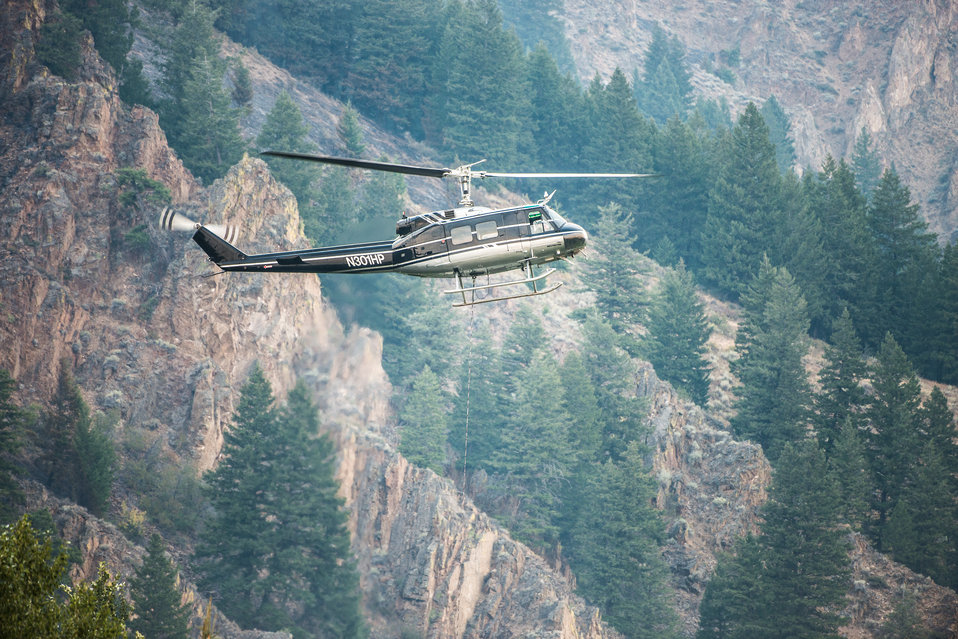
A Bell UH-1H helicopter performs water drops on fires, on the Carbonate Ridge, rising behind the Wood River, during Beaver Creek Fire, west of Hailey, ID, on Monday, Aug 19, 2013.